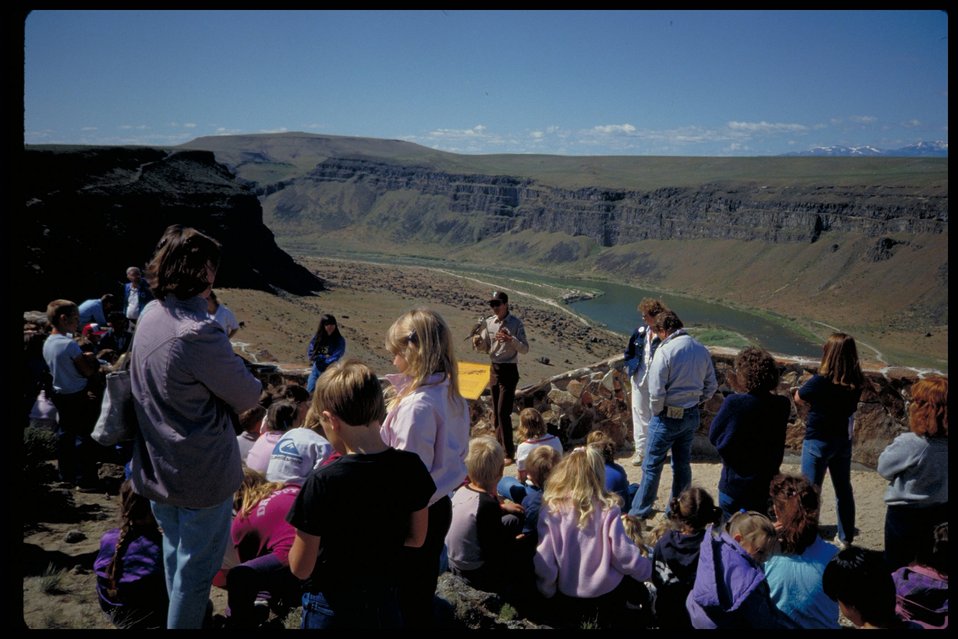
Birds of Prey Festival Birds of Prey National Conservation Area BOP Owyhee Field Office LSRD Lower Snake River District